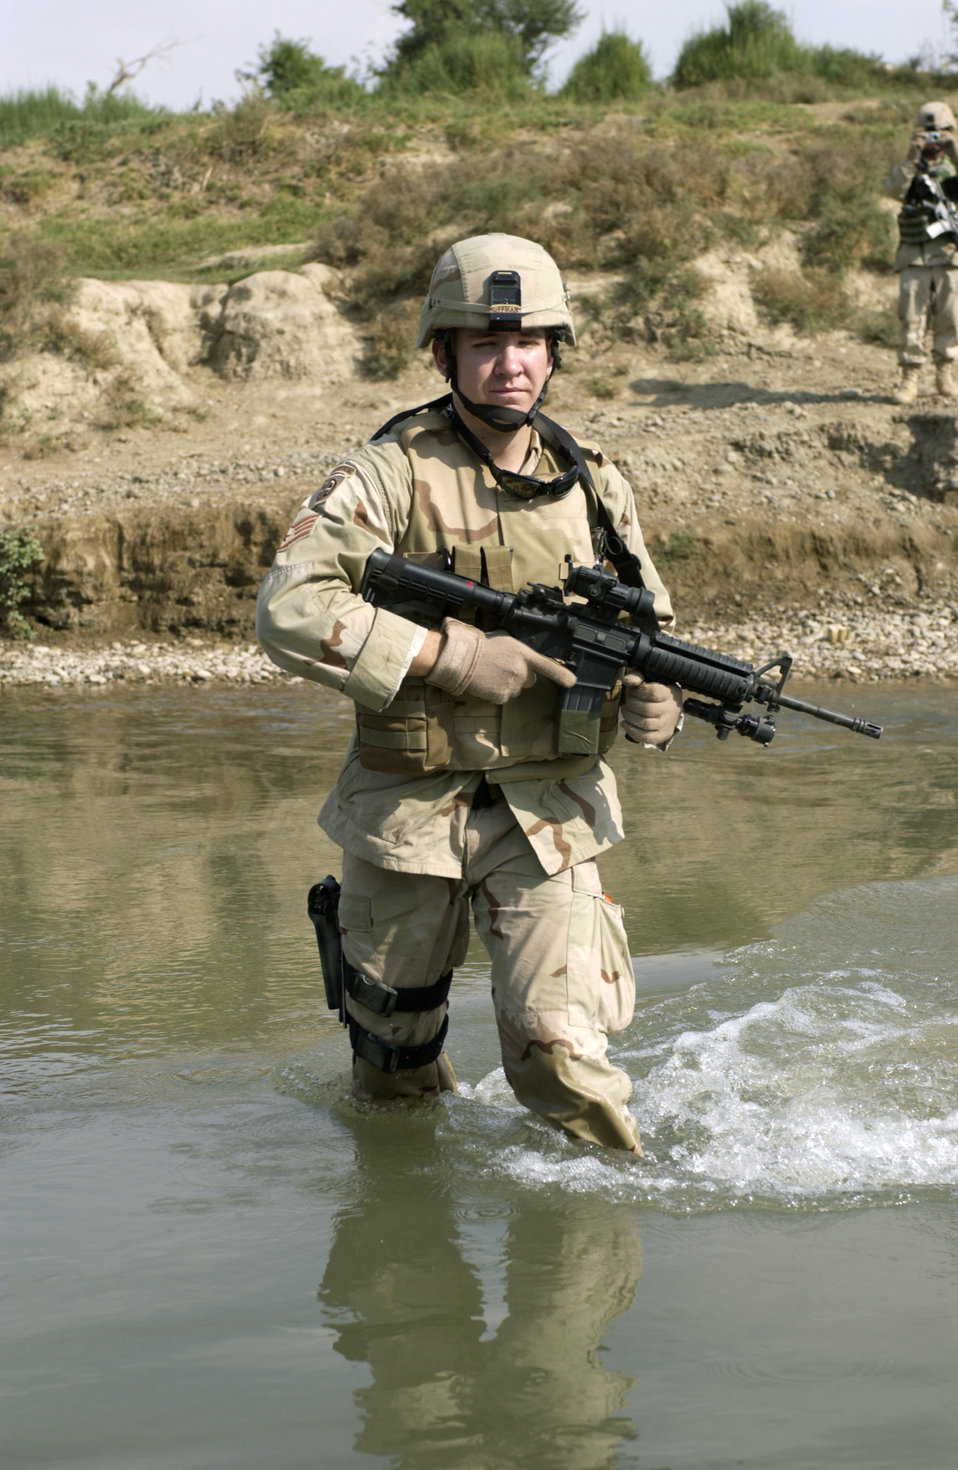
Crossing the Tigris

NEAR AD DWR, Iraq -- Staff Sgt. Michael Huffman crosses the Tigris River here recently. Tactical air control party members of the 1st Infantry Division and members of 426th Civil Affairs are checking on the progress of schools contracted to be built. Sergeant Huffman is a tactical air control party member from Detachment 1, 2nd Air Support Operations Squadron attached to the 1st Infantry Division.